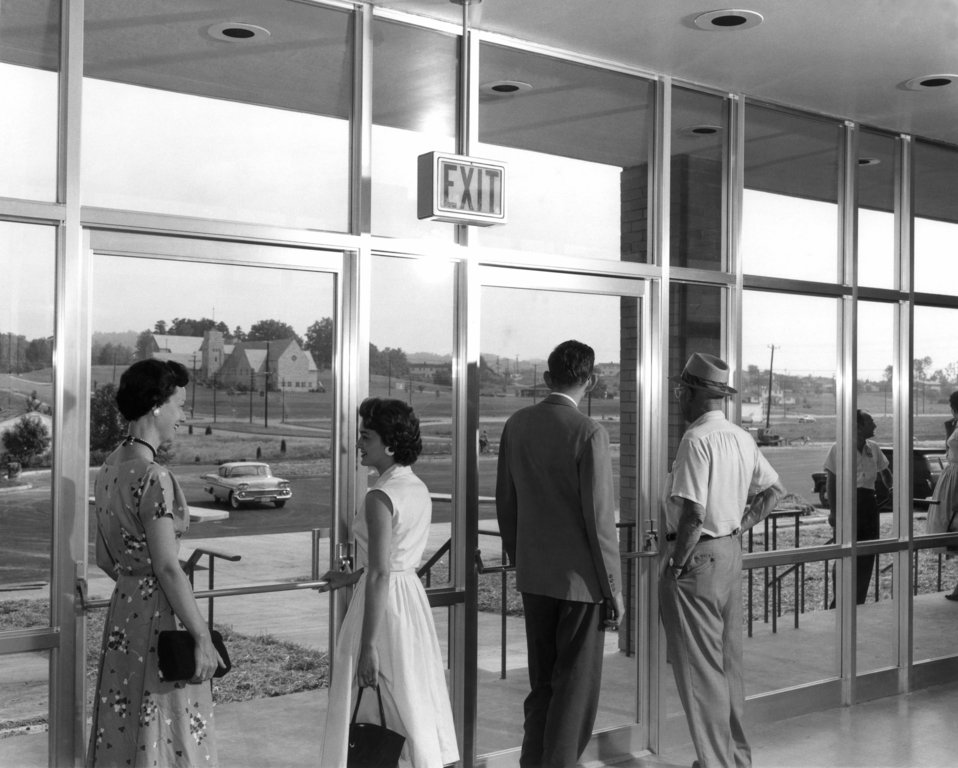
City Municipal building showing visitors Oak Ridge

58-0465-b DOE photo by Ed Westcott
City Municipal building showing visitors Oak Ridge Tennessee 6-6-1958